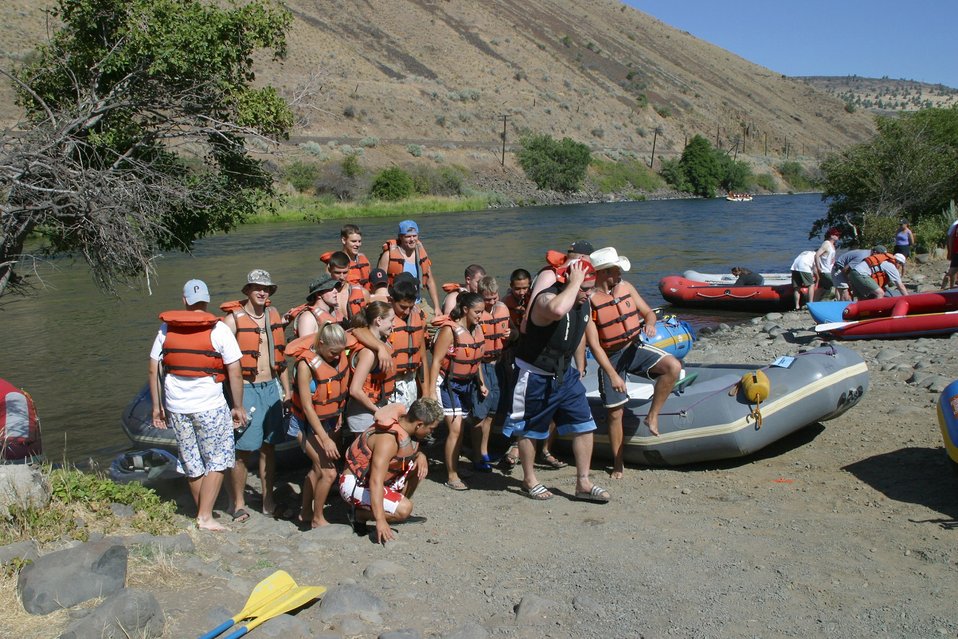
Groups gather for pictures before leaving the Harpham Flat boat ramp.